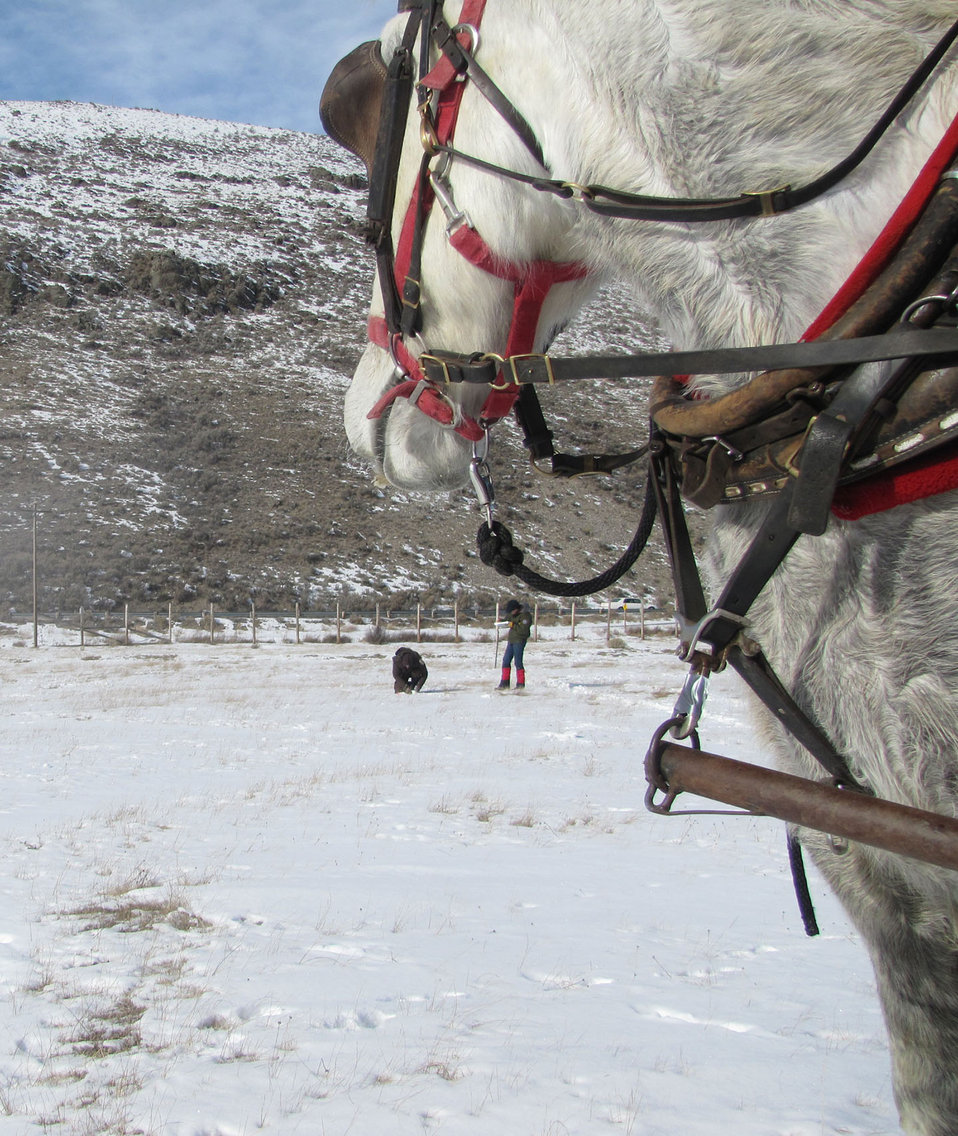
Status check

John, a Percheron horse, looks over to check on the status of two biologists measuring the amount of remaining forage.

Biologists from the National Elk Refuge and the Wyoming Game & Fish Department utilized a horse-drawn sleigh to complete their work. Nearby elk are acclimated to the sleighs, but individuals on foot can stress the wintering animals. The sleigh obscured the scientists while they conducted their work on the ground.